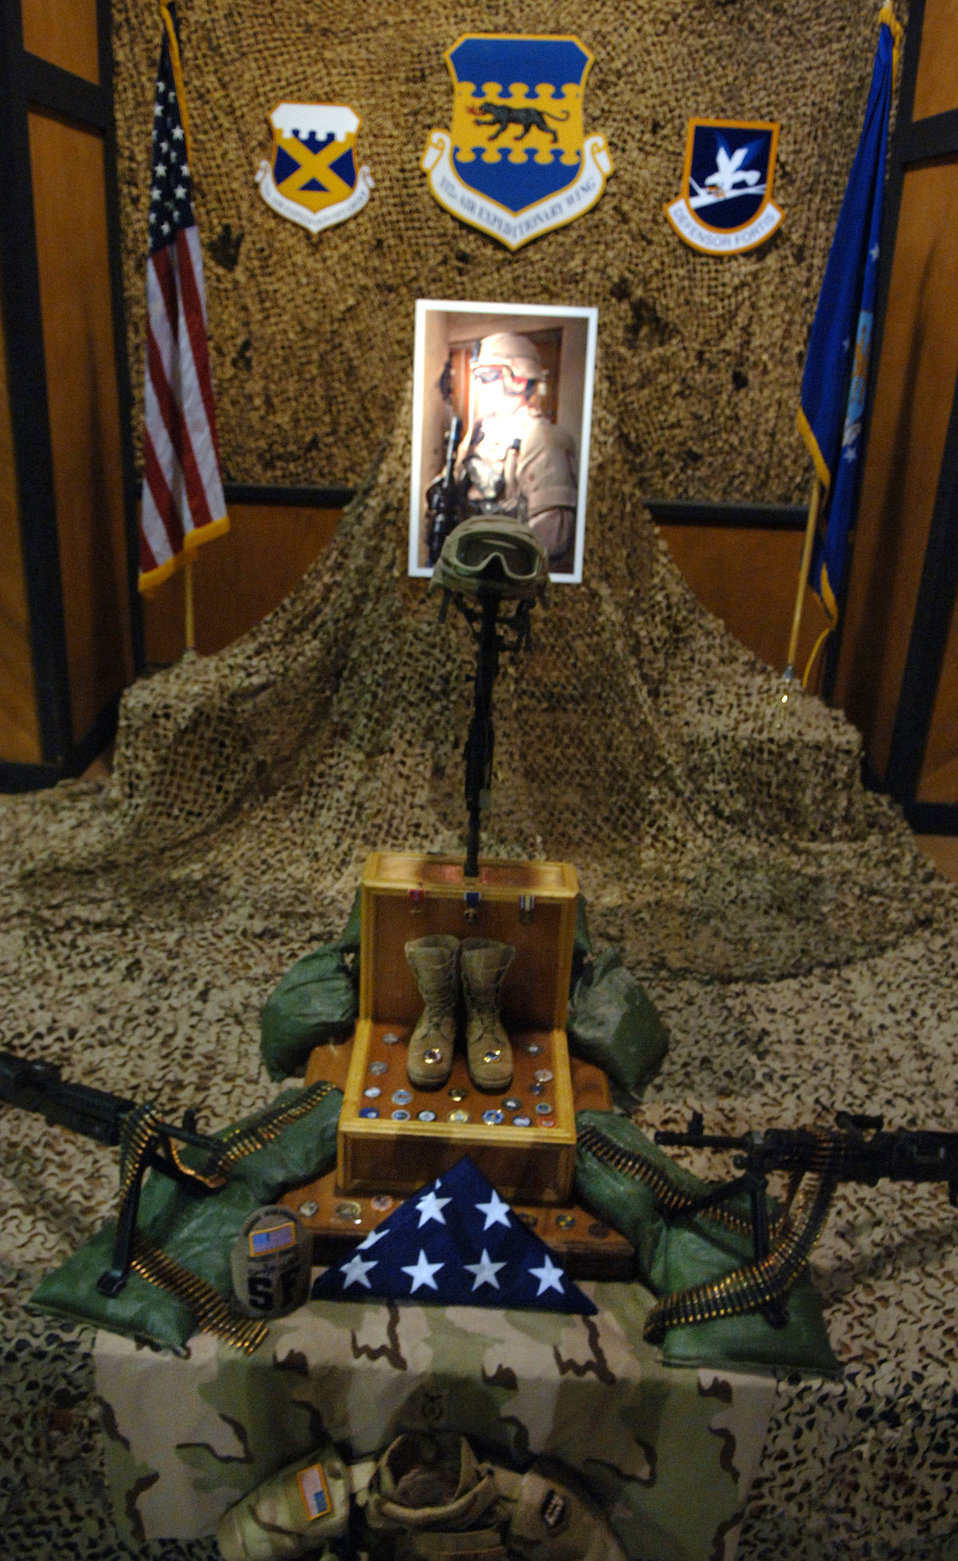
Balad Airmen say goodbye to fallen warrior

The display at Staff Sgt. John T. Self's memorial contained many personal items and mementos left by fellow Airmen and those who knew him well as a gesture of lasting respect May 18 at Balad Air Base, Iraq. Sergeant Self died during combat operations May 14 in the Baghdad area.